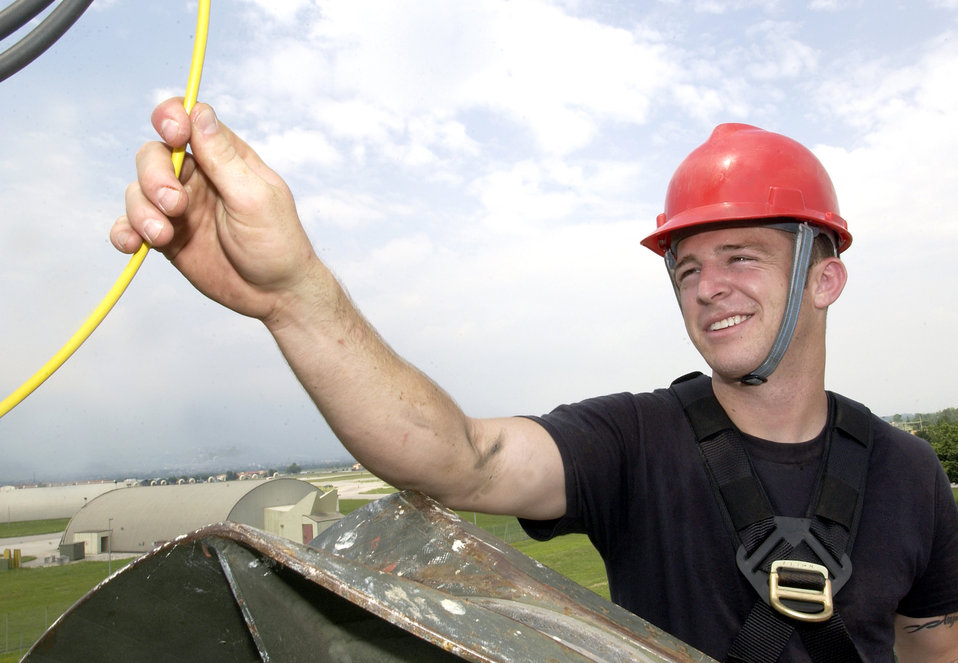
Wired up

AVIANO AIR BASE, Italy -- Airman Patrick Oconnor checks the electrical wiring connected to an antenna support pole during a routine maintenance inspection here July 8. Airman Oconnor is assigned to the 31st Communication Squadron's cable maintenance shop.